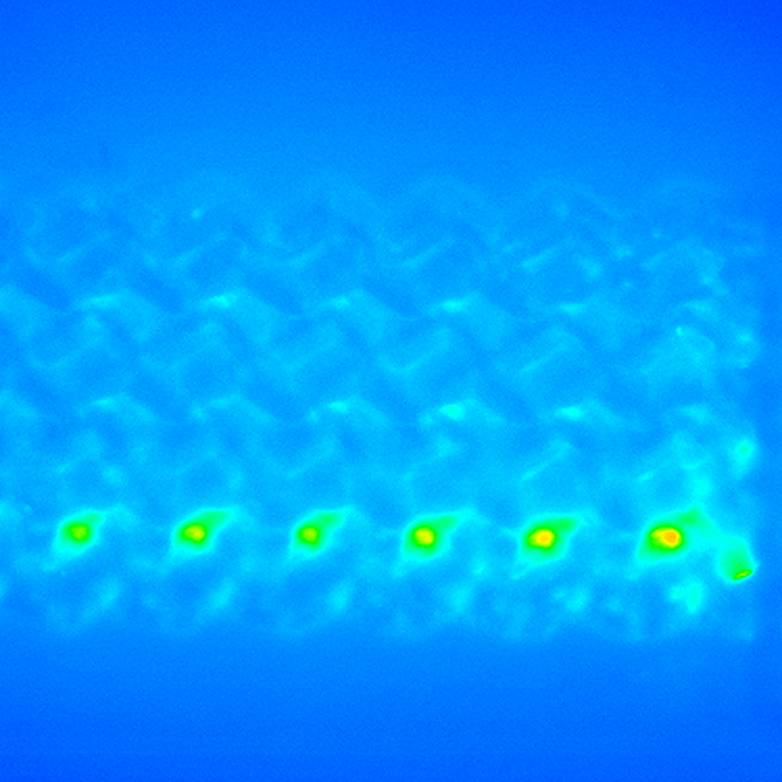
Lab-on-a-Chip

The stained bacterial cells shown in this image are part of a prototype 'lab on a chip' sensor system designed by NIST scientists and collaborators. The cells adhere to posts constructed within microscopic channels of a plastic sensor device. The blue, green, yellow, and orange colors reflect increasing densities of e.coli cells, which eject potassium in the presence of certain chemicals.